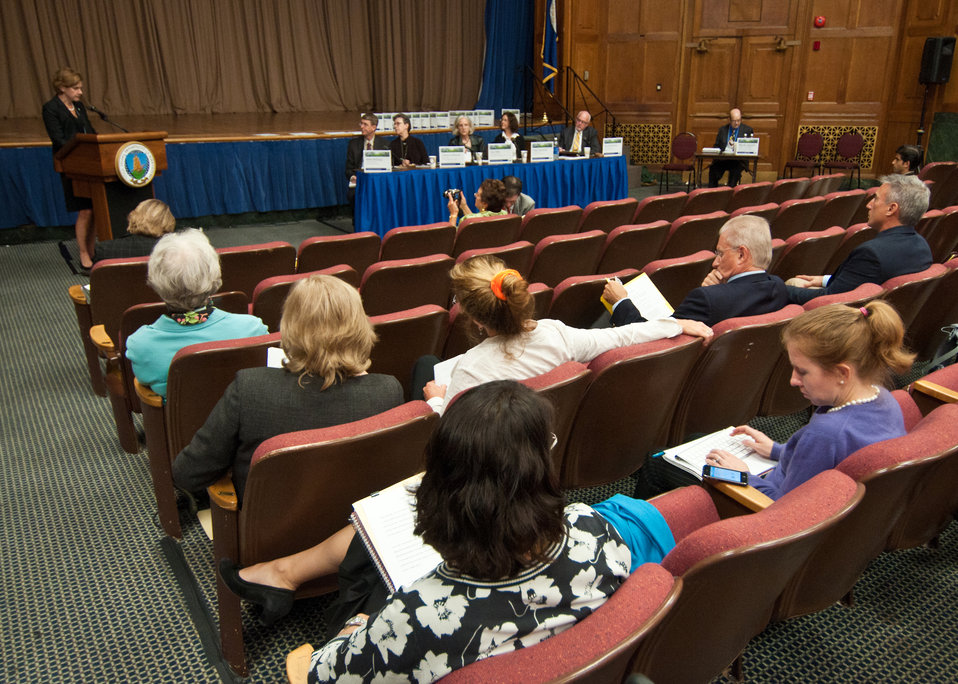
Jennifer Rose, Organic Trade Association tweets to followers of the Organic Trade Association’s Twitter feed during the USDA Activities and Priorities Related to Organic Agriculture and Markets Public Listening Session held at the U.S. Department of Agriculture in Washington, DC Tuesday, September 2011. To Rose’s left is Laura Batcha, Vice President, Organic Trade Association. The purpose of the event was to gain the perspective of stakeholders and members of the public, important tools to help USDA Programs examine and prioritize their activities and objectives in order to best serve the organic community.